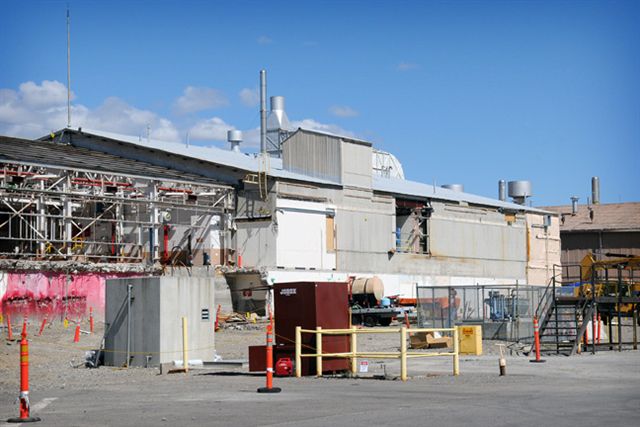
RAN DD INTEC S84 CPP-602 EASTSIDE 070610 P6554-009 A